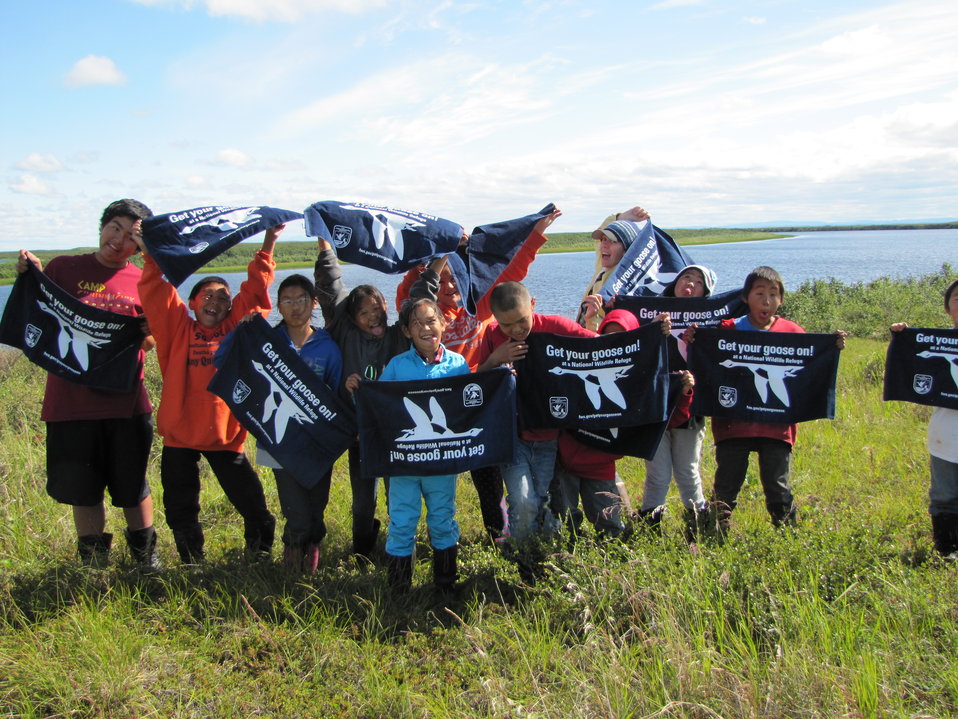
Get Your Goose On!

Selawik kids get goofy with their goose towels on the Selawik National Wildlife Refuge.